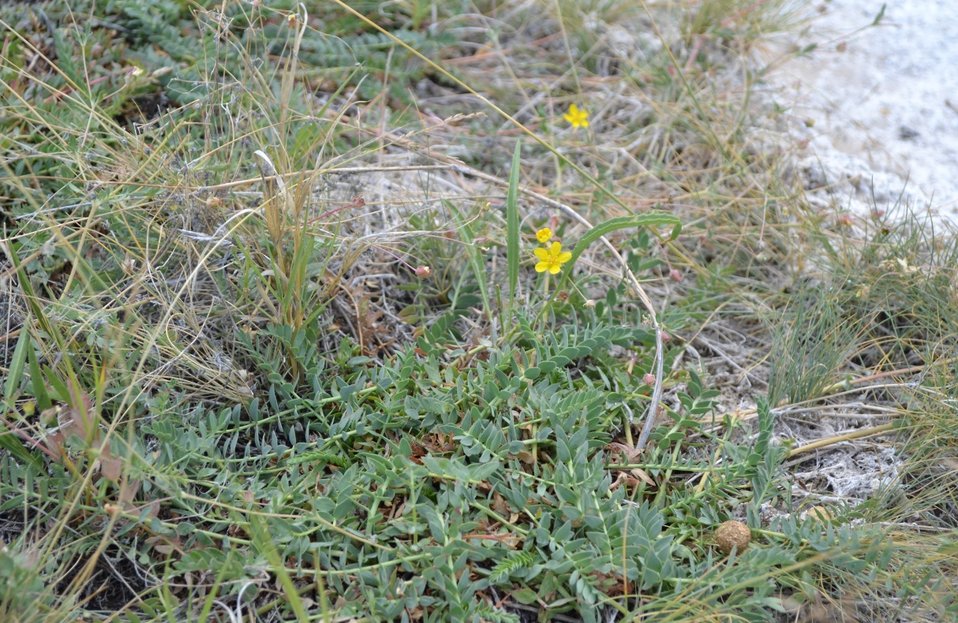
Soldier Meadow cinquefoil Sarah Kulpa USFWS

Although rare, the Soldier Meadow cinquefoil population is stable. Conservation measures are in place that will adequately conserve the species.